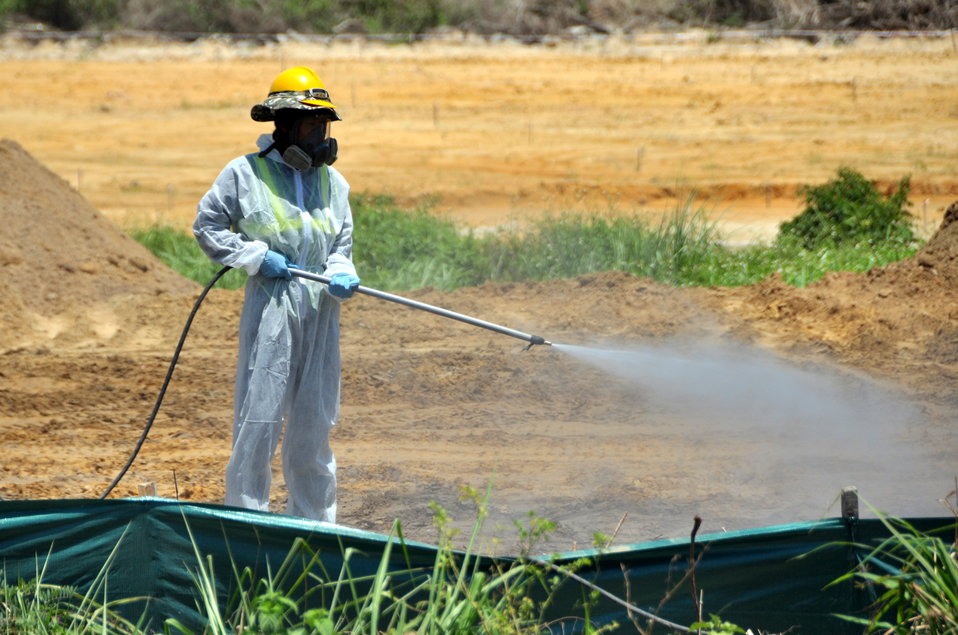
Environmental Remediation Progress at the Danang Airport site

Progress at the Remediation of Dioxin Contamination Project Site

Danang, Vietnam, June 5, 2013